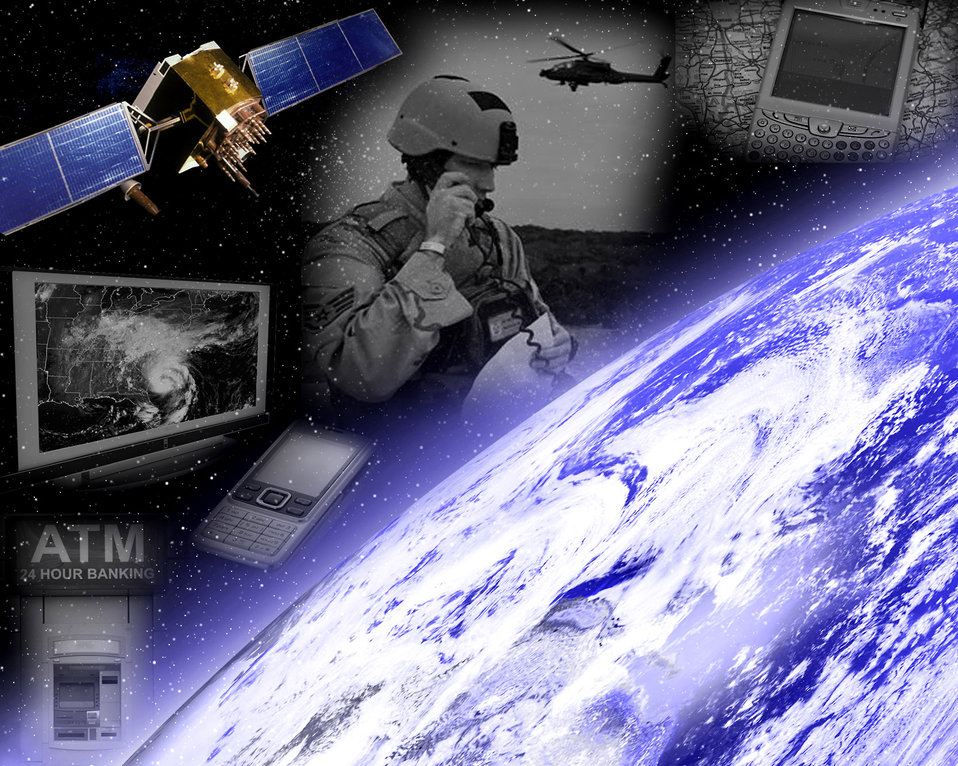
Interest in space wanes despite America's space dependency

A three-day Space Education Symposium held by Air University?s National Space Studies Center brought together experts and scholars from universities, military and government agencies to discuss concerns about space assets being mostly an unsecured resource and how few Americans understand their dependency on them.